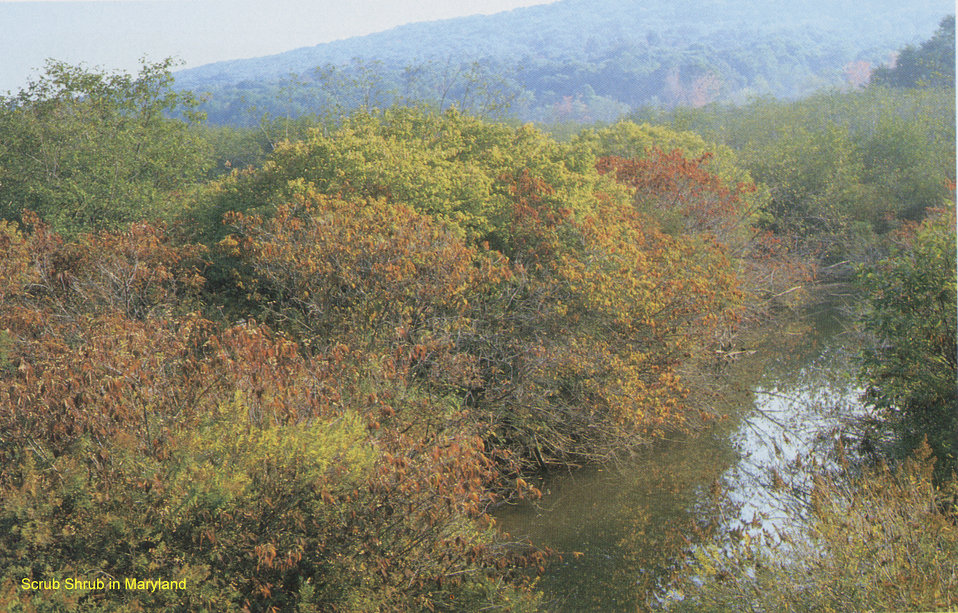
Palustrine Scrub-Shrub Swamp in Maryland